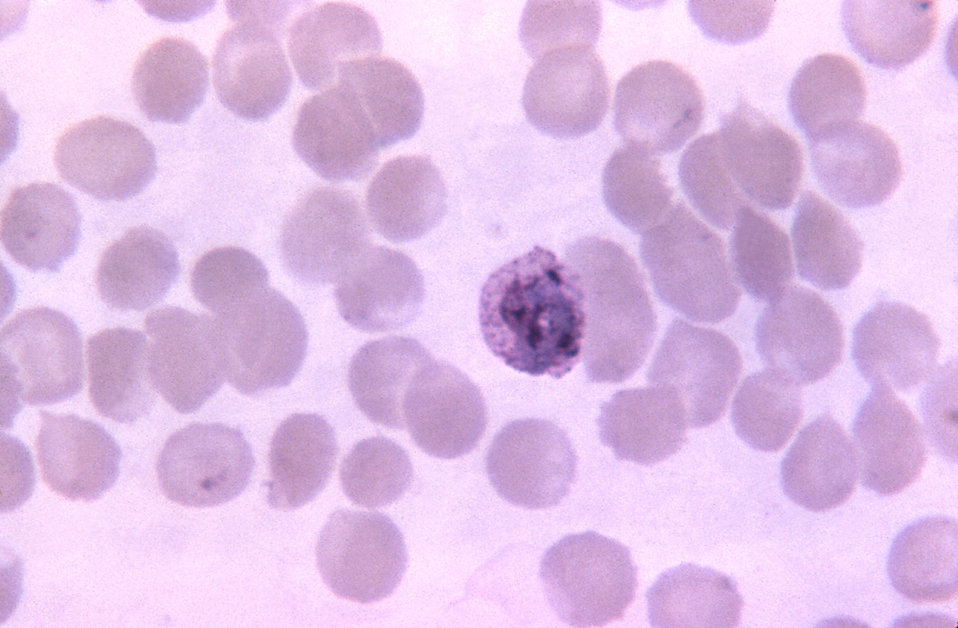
This thin film Giemsa stained micrograph depicts an immature Plasmodium vivax schizont.